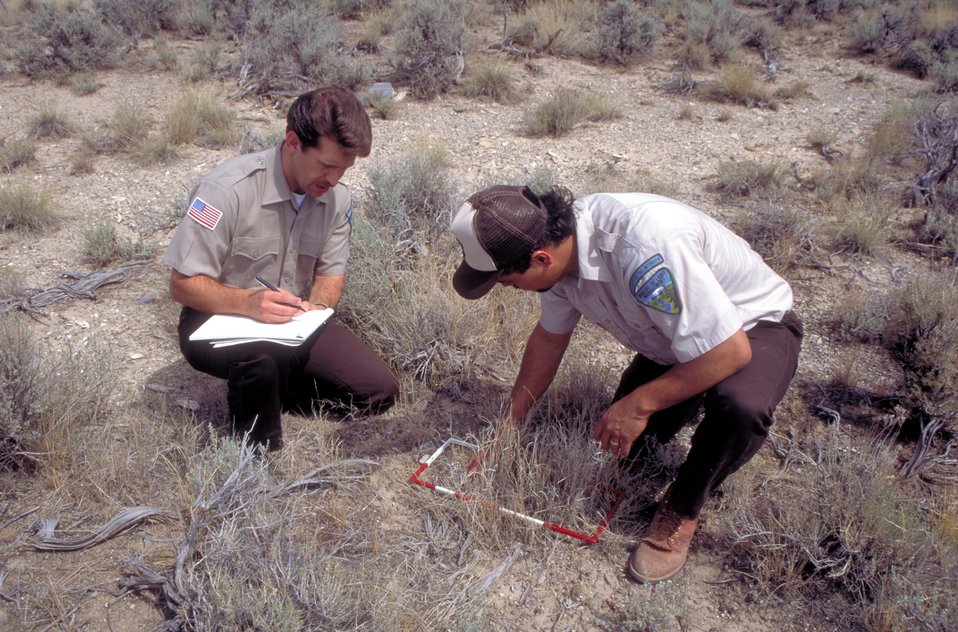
Range study in the West Desert of Utah.